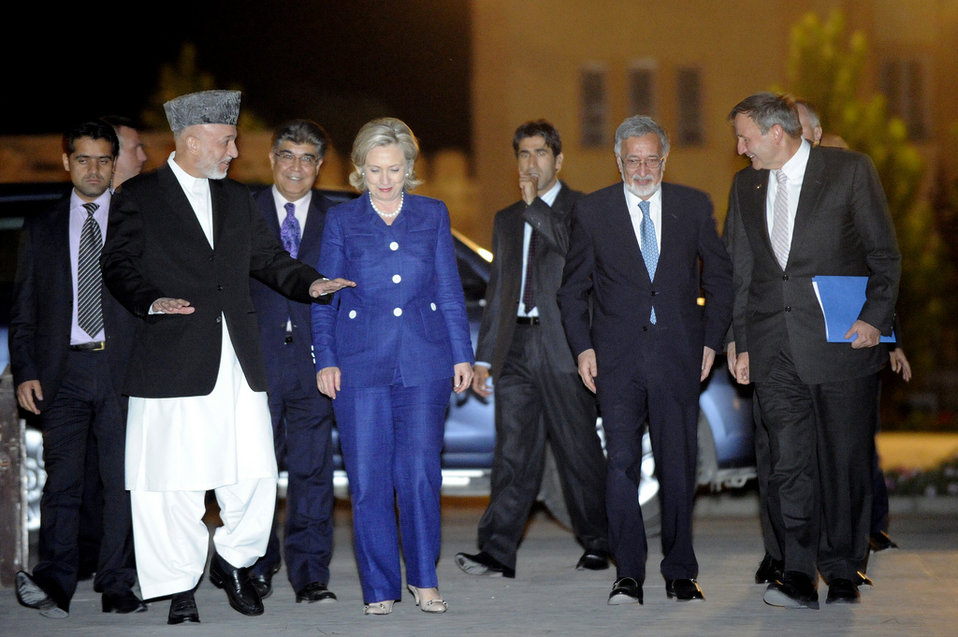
Secretary Clinton Is Greeted By Afghan President Karzai

U.S. Secretary of State Hillary Rodham Clinton, center, is greeted by Afghan President Hamid Karzai, left, in Kabul, Afghanistan, on July 19, 2010.